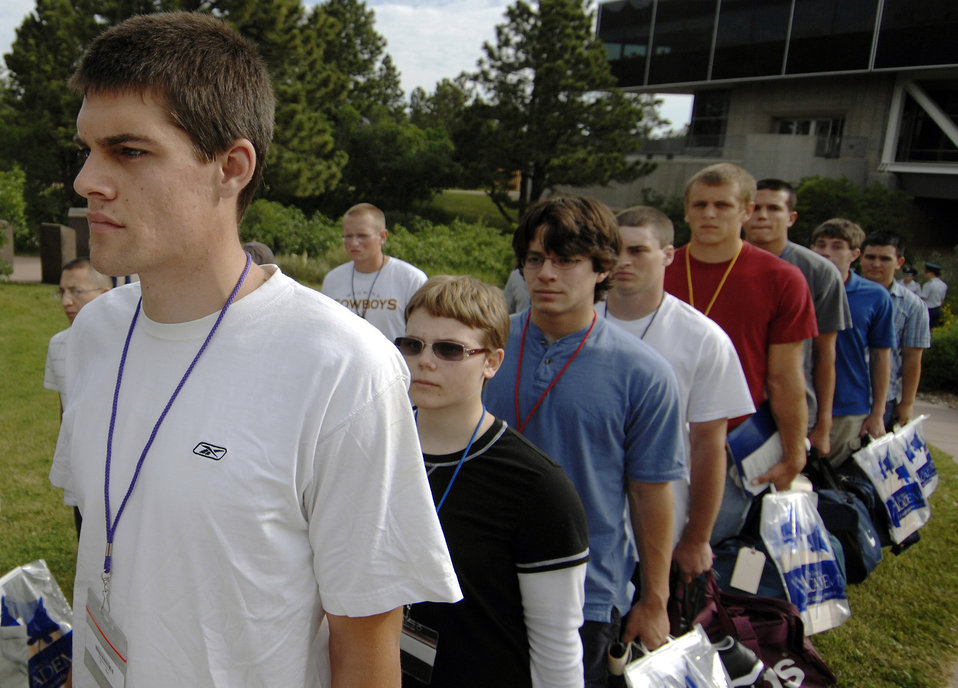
Welcome to the Air Force Academy!

Basic cadets wait to board a bus from the Association of Graduates' Heritage Trail to the cadet area during cadet inprocessing June 25 at the U.S. Air Force Academy in Colorado Springs, Colo. Of the more than 1,300 cadets accepted into the Class of 2013, 41 are prior enlisted servicemembers, and 31 graduated from the U.S. Air Force Academy's Preparatory School.